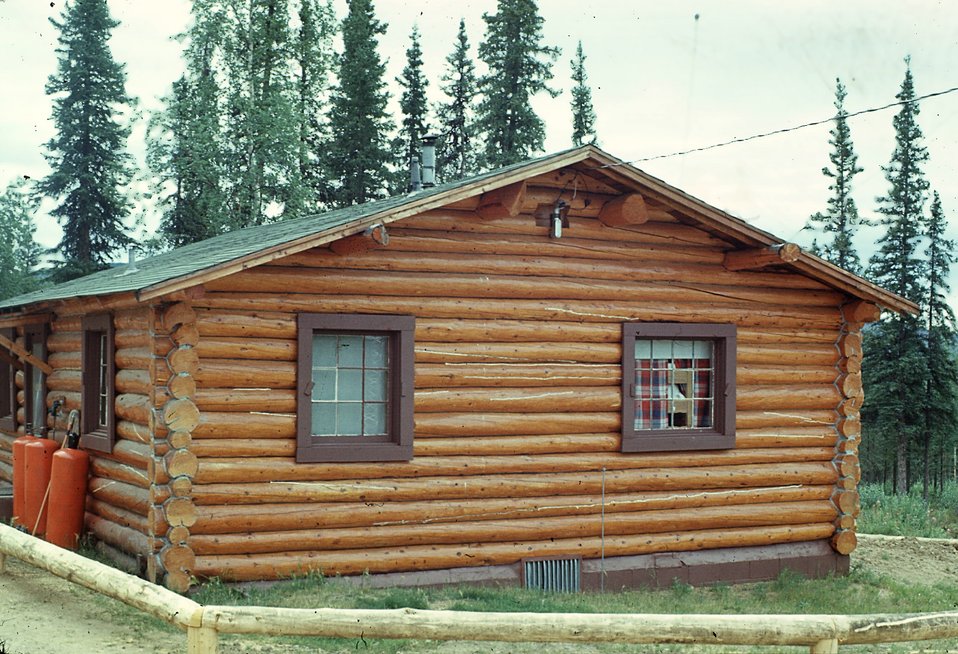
Living quarters, BLM compound, Chicken, Alaska